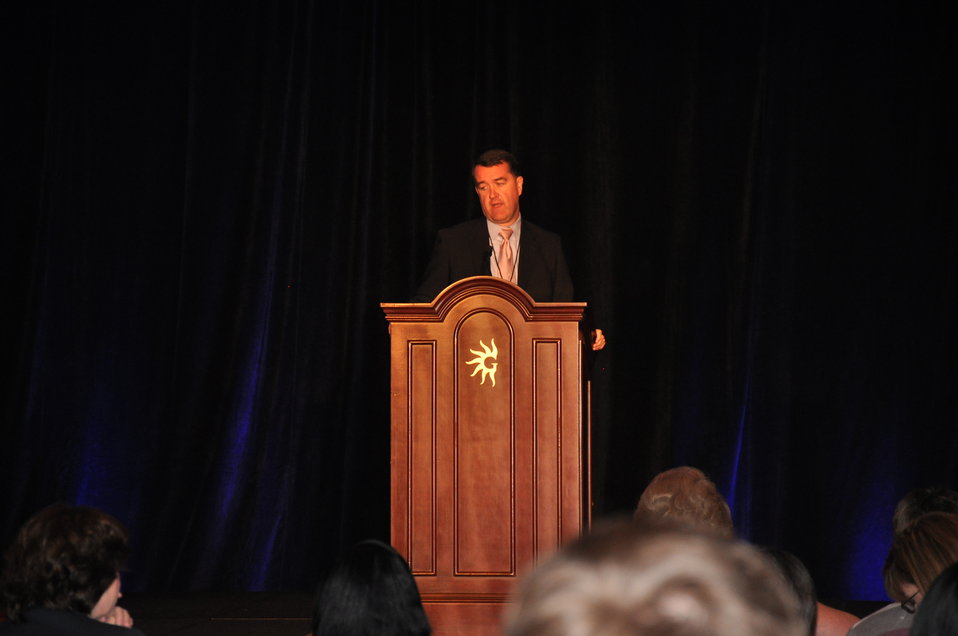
Workforce Transition Arises as Central Theme in Information Exchange

DOE Senior Policy Advisor Colin Jones explains EM’s workforce transition plans at the Information Exchange.